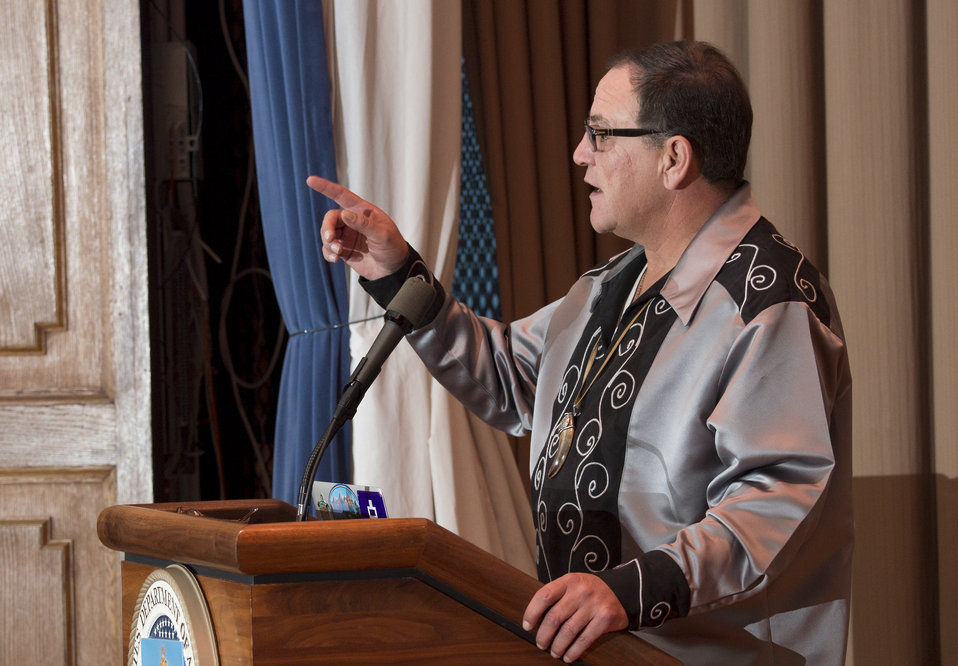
United South and Eastern Tribes President Brian Patterson makes remarks at the 2013 American Indian and Alaska Native Heritage Observance at the U.S. Department of Agriculture (USDA) on Thursday, Nov. 14, 2013 in Washington, D.C. The theme of this year’s event was “Guiding Our Destiny with Heritage and Traditions.”